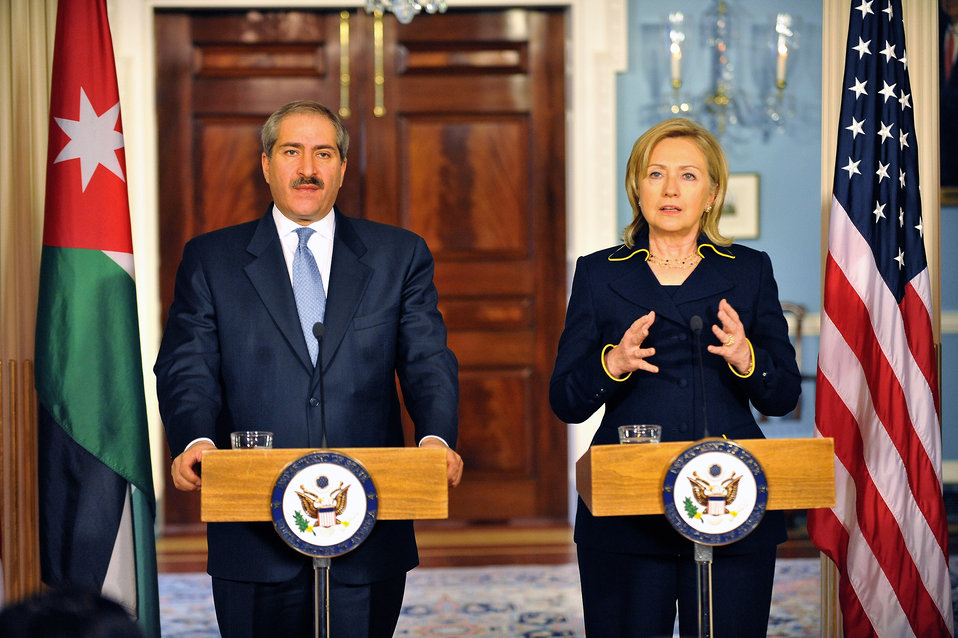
Secretary Clinton and Jordanian Foreign Minister Judeh Deliver Remarks

U.S. Secretary of State Hillary Rodham Clinton and Jordanian Foreign Minister Nasser Judeh deliver remarks in a joint press conference at the U.S. Department of State in Washington, D.C., on January 26, 2011.